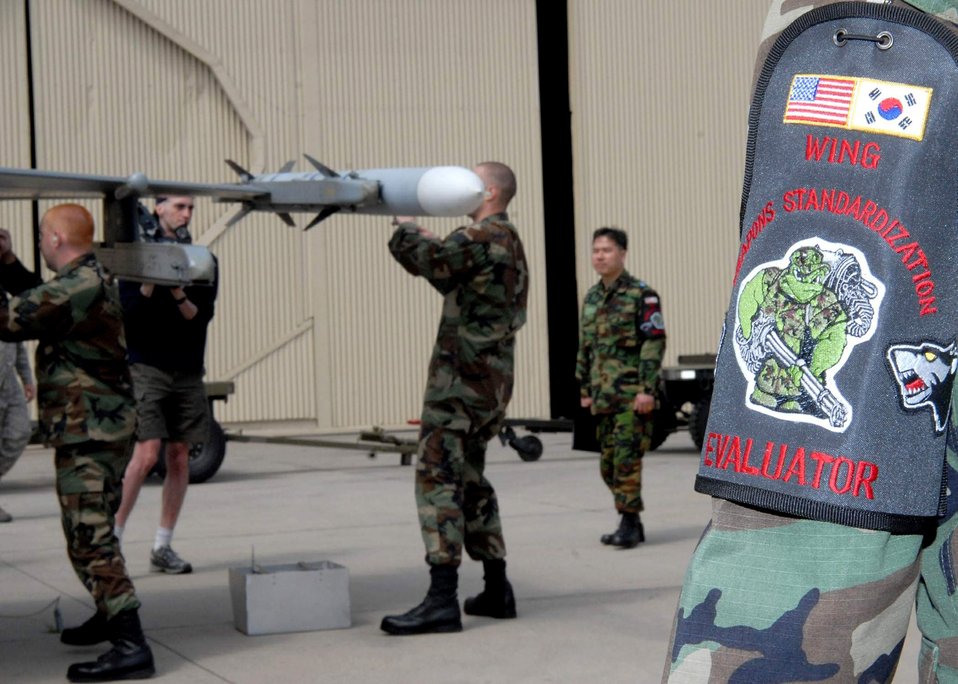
Kunsan hosts peninsula-wide weapons load competition

Evaluators watch the loading procedures of members of the 80th Aircraft Maintenance May 10 at Kunsan Air Base, South Korea. Members from the 35th Aircraft Maintenance Unit from Kunsan AB and the 36th Aircraft Maintenance Unit from Osan Air Base, South Korea, competed against each other during a peninsula-wide weapons load competition.